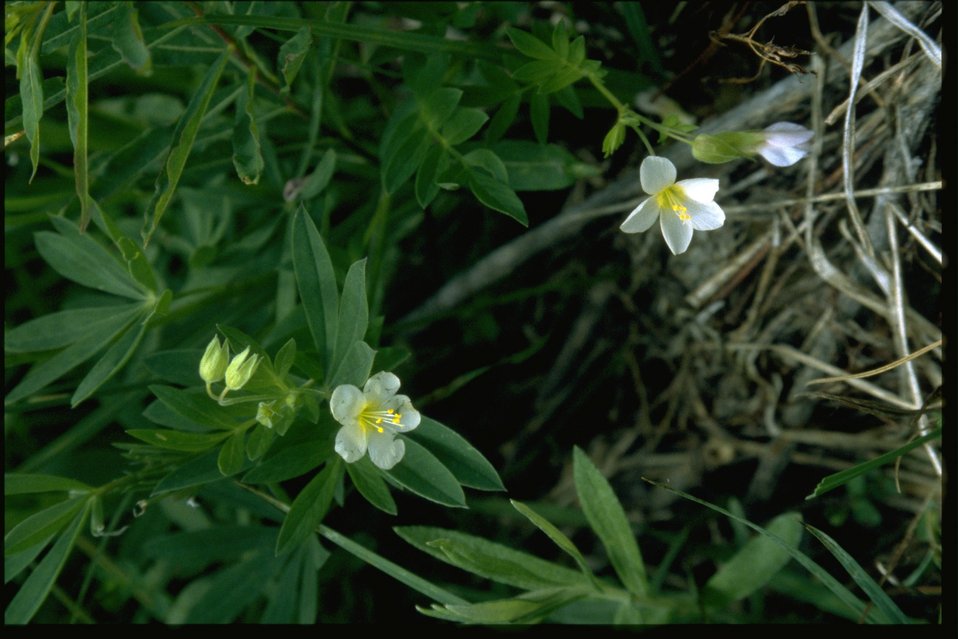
Medium shot of Polimonium pulcherrimum.